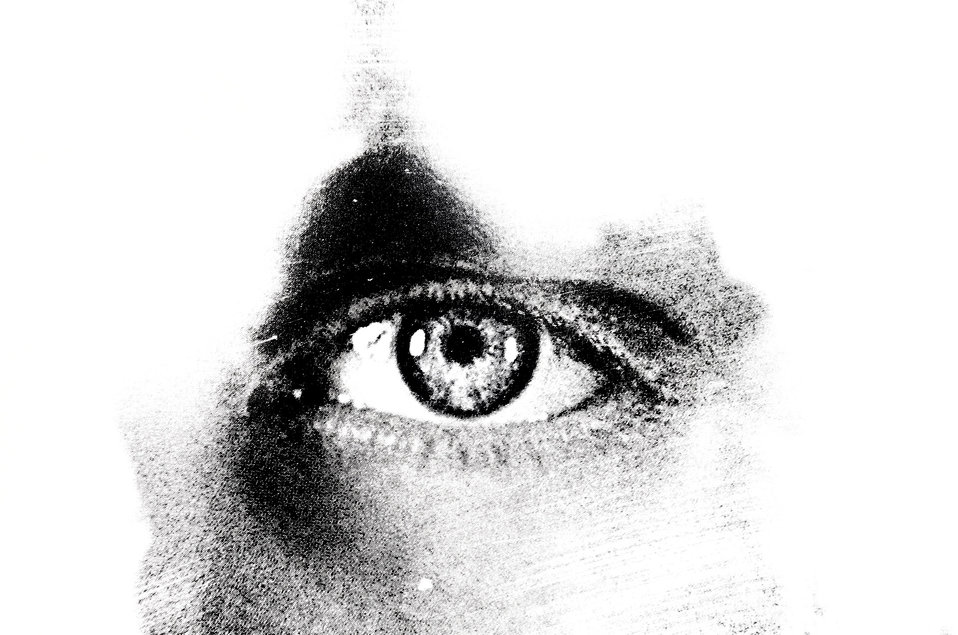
Eye - background.